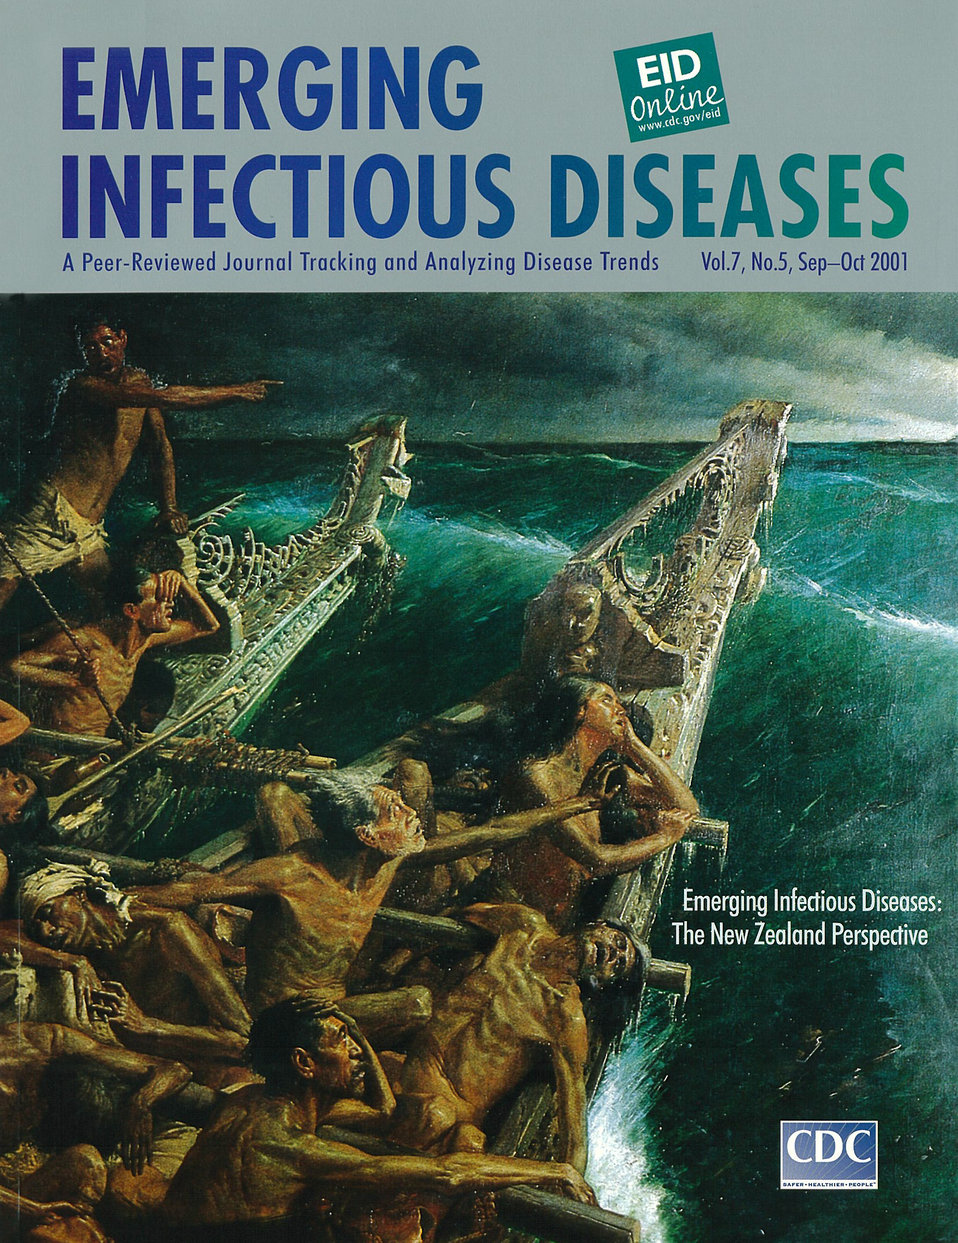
Emerging Infectious Diseases (EID) cover artwork for Volume 7, Number 5, September-October 2001 issue.